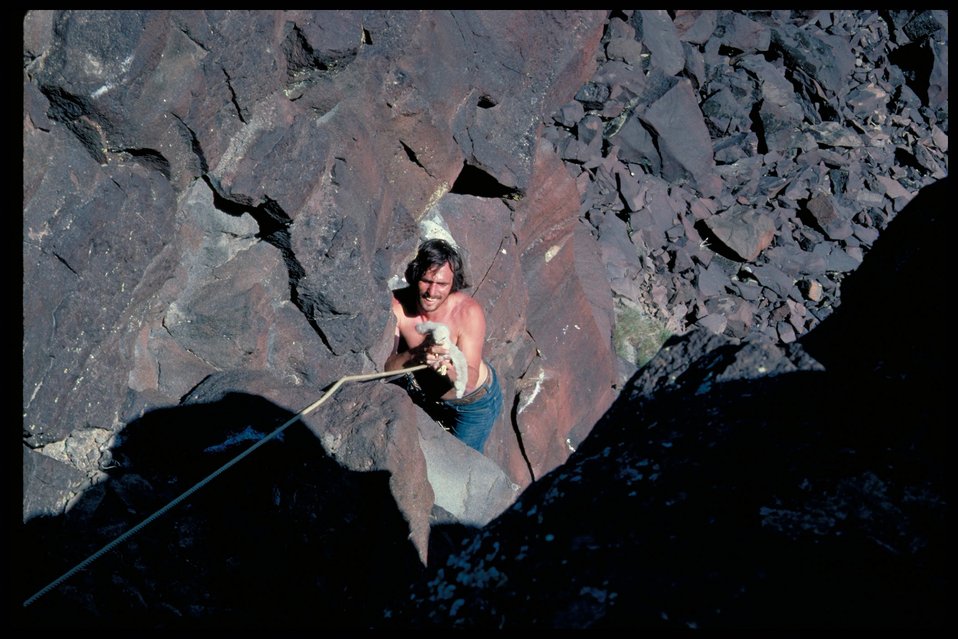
Examining chicks Birds of Prey National Conservation Area BOP Owyhee Field Office LSRD Lower Snake River District